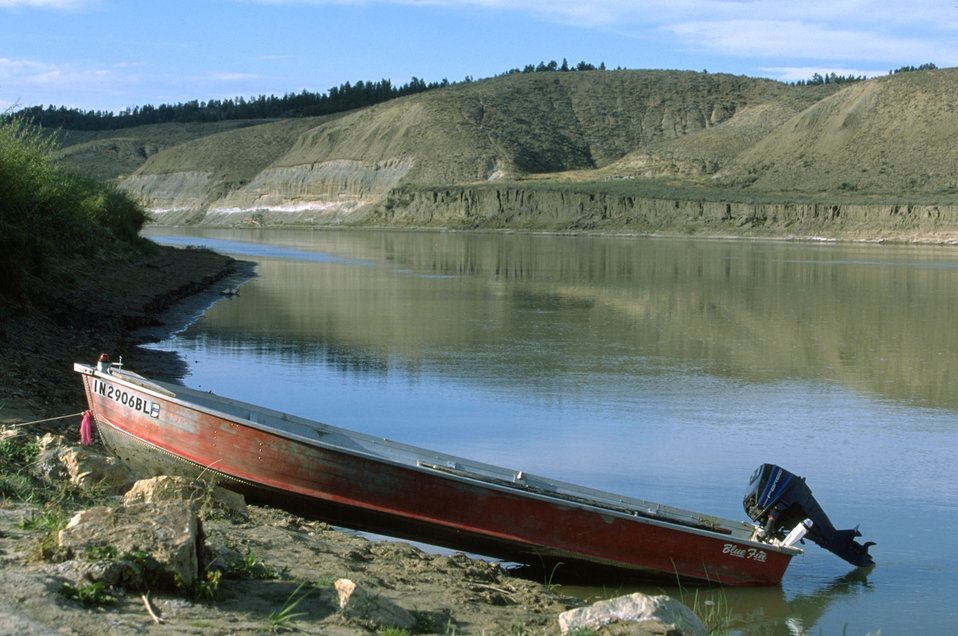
Kipp Recreation Area